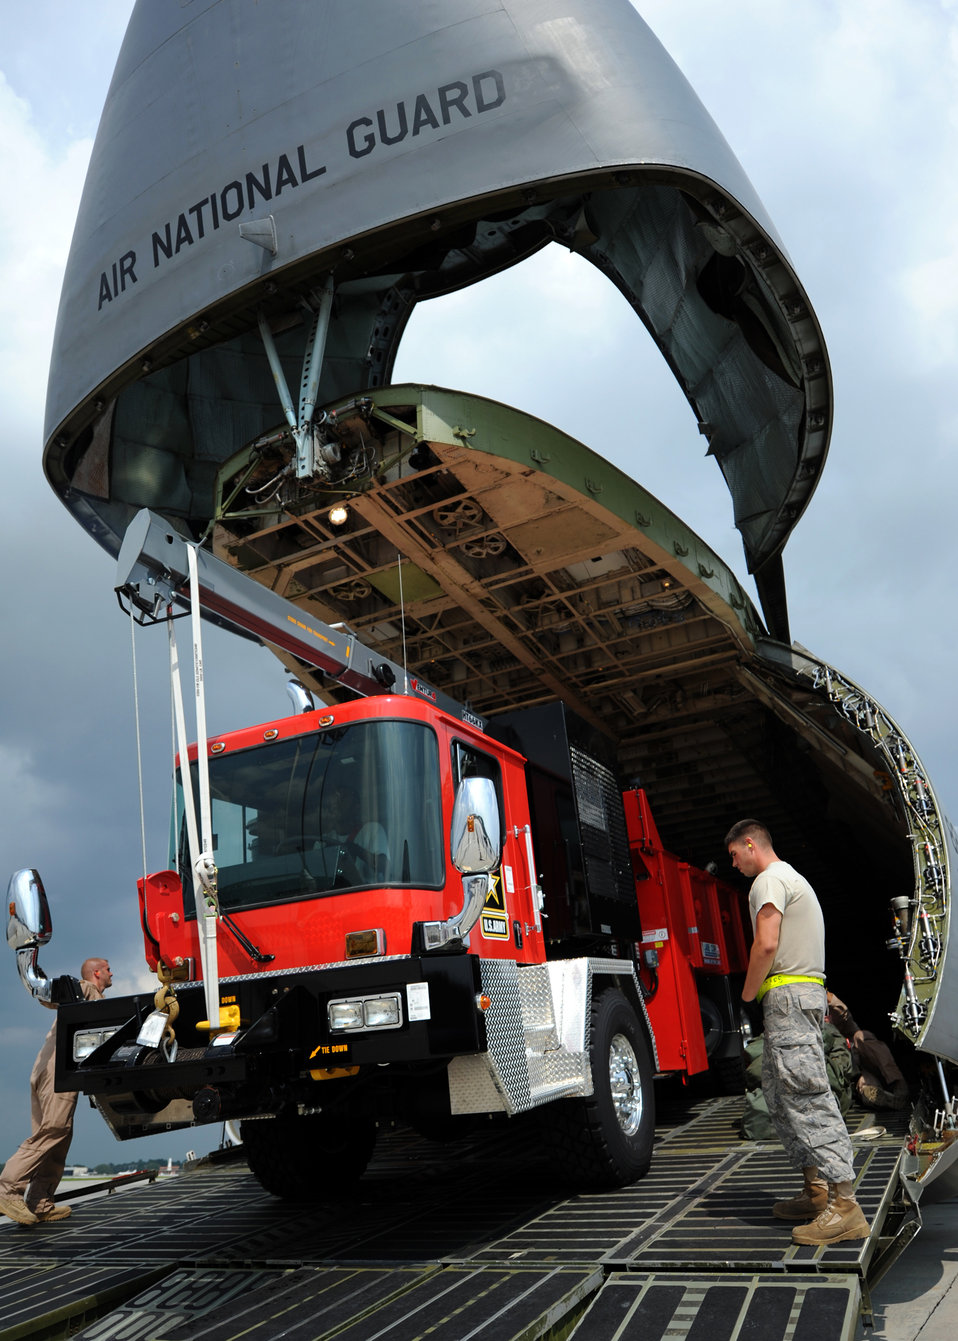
Easy does it

Airmen with the 437th Aerial Port Squadron guide a vehicle operator as he backs a water well drilling truck into a C-5 Galaxy July 30, 2010, on Joint Base Charleston, S.C. The truck was contracted by the U.S. Army to provide troops in the Middle East potable on-site water at the source rather than trucking water to the base of operations.